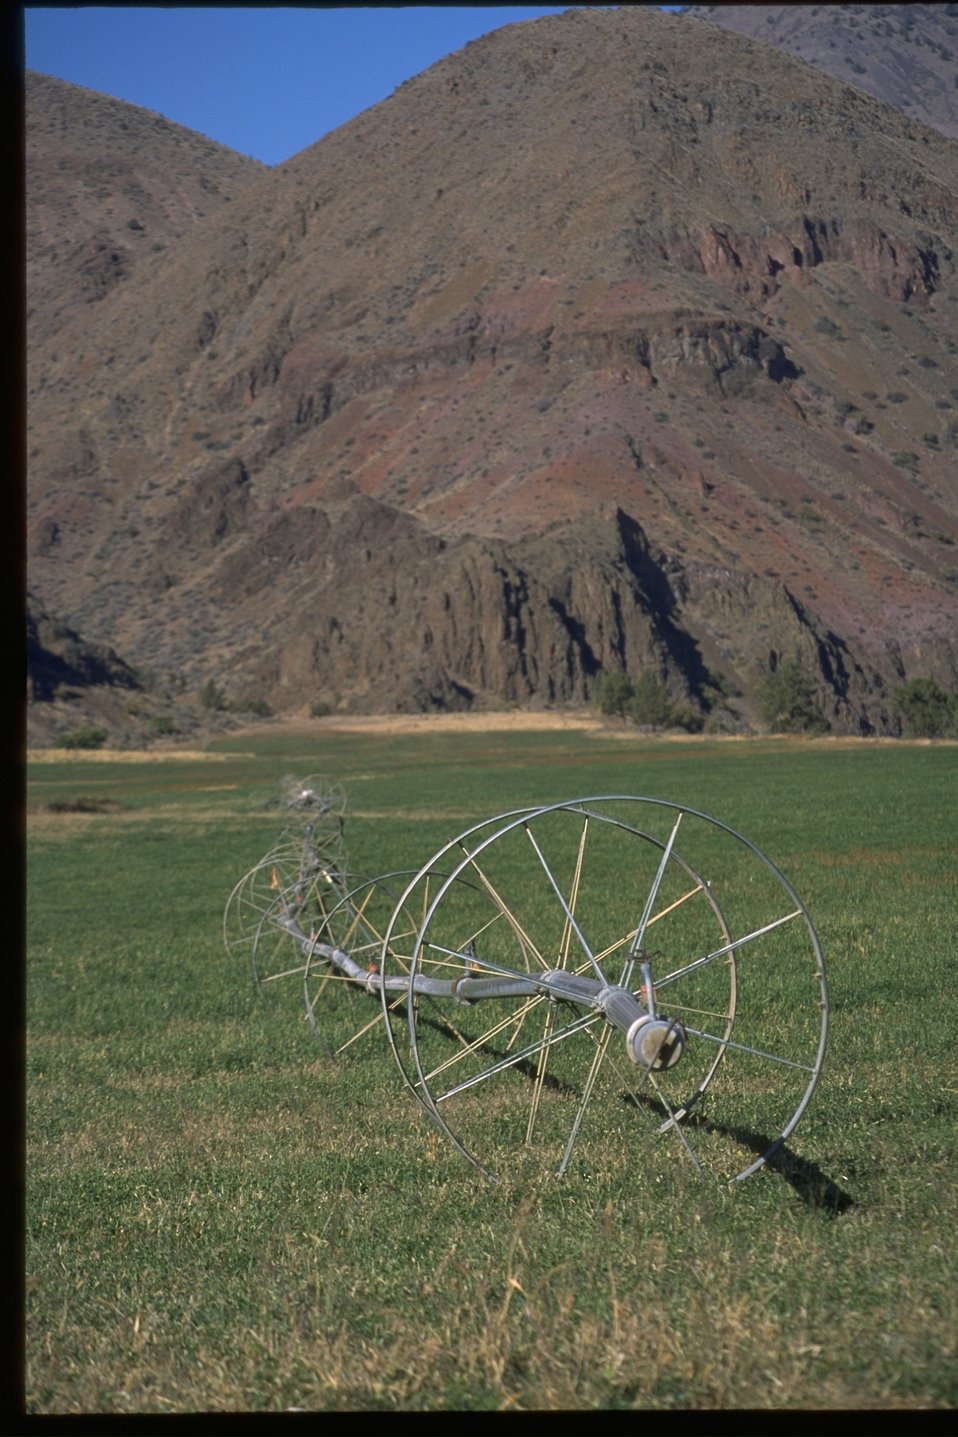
Sprinkler irrigation system in private agricultural land along the John Day River.